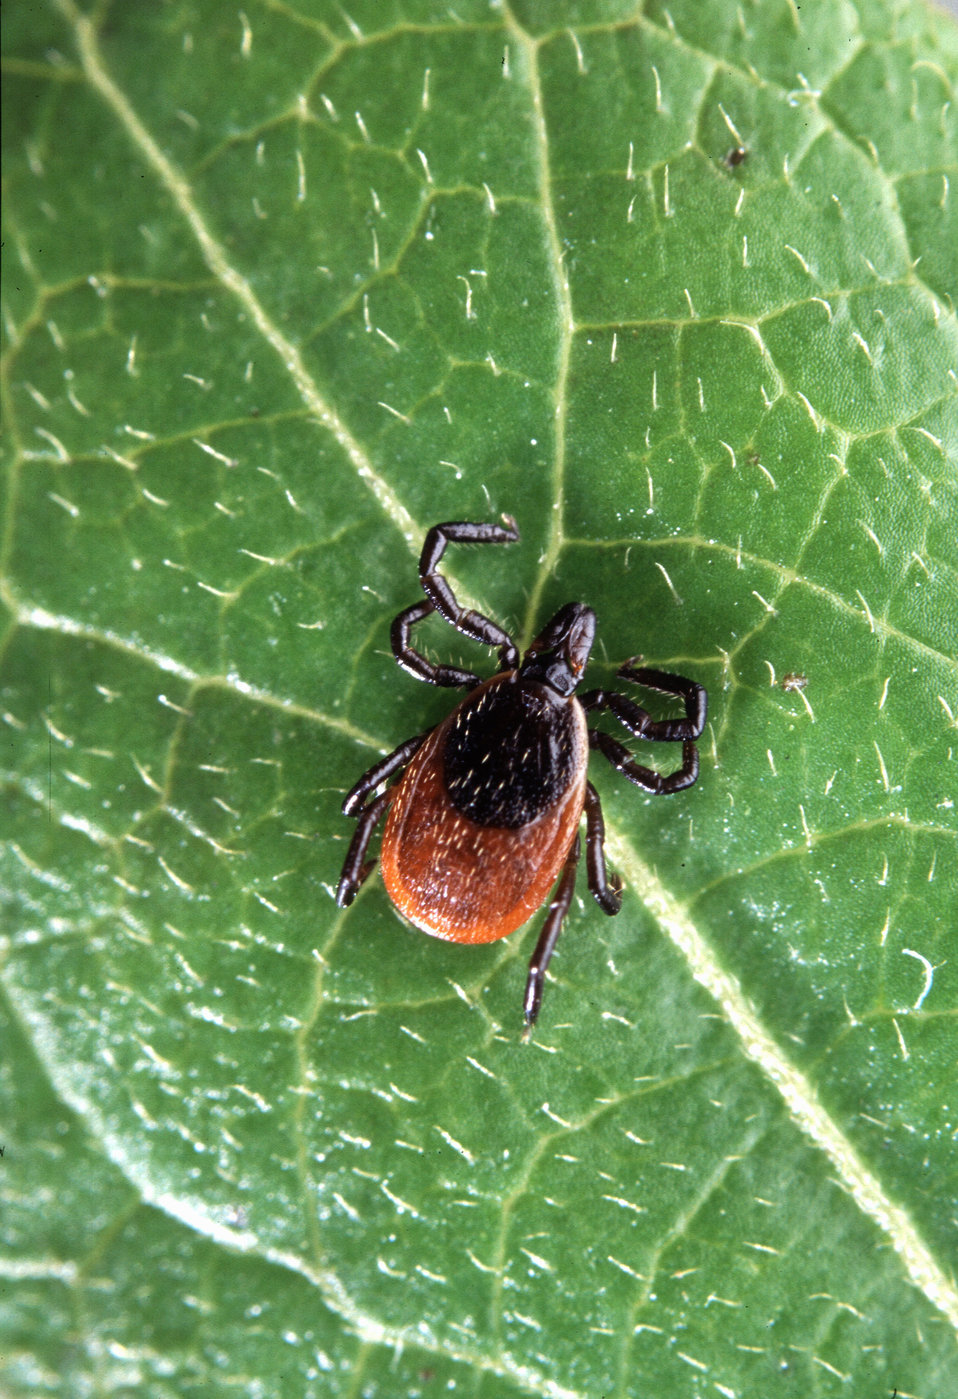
An adult deer tick (Ixodes scapularis) sits on a leaf.